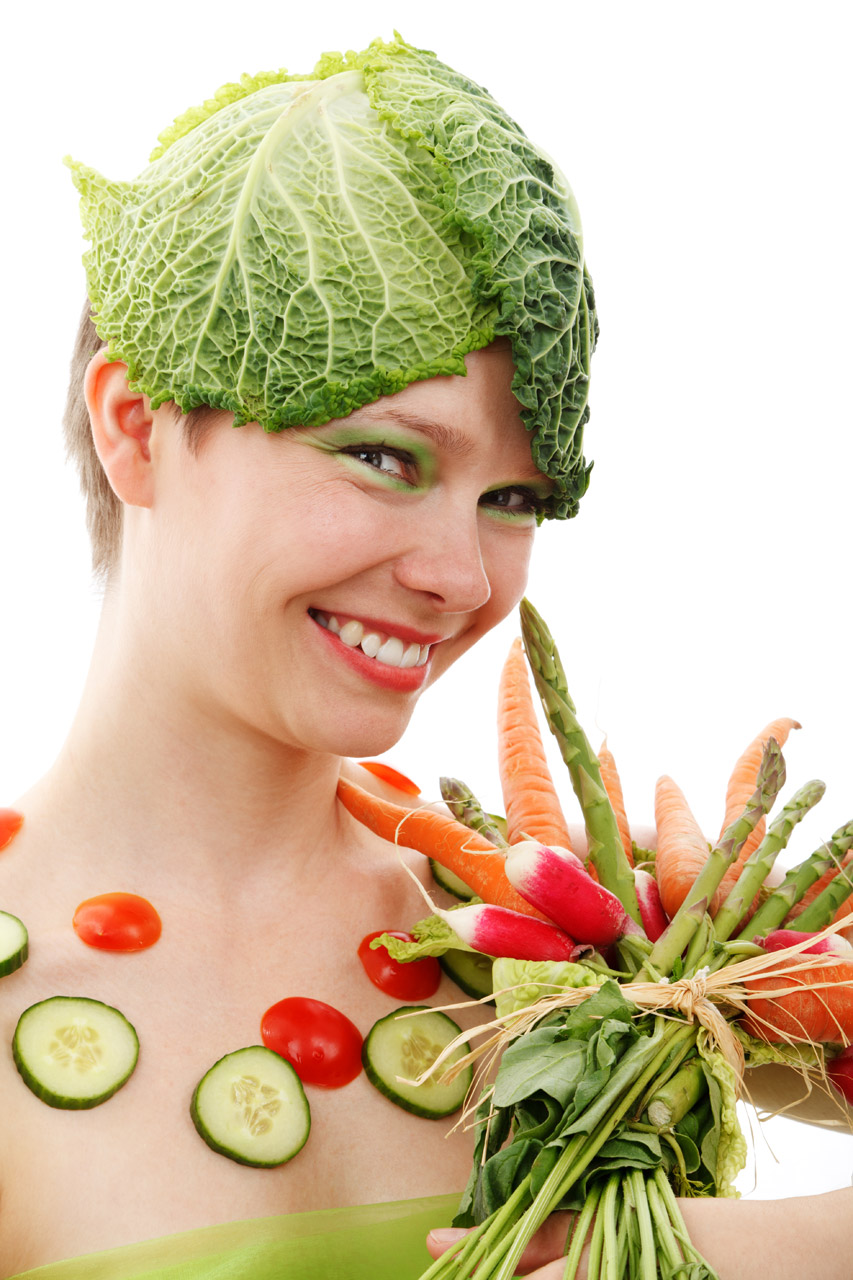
Happy vegetarian

Young woman (jana svojsova) wearing colorful vegetable isolated on white background.